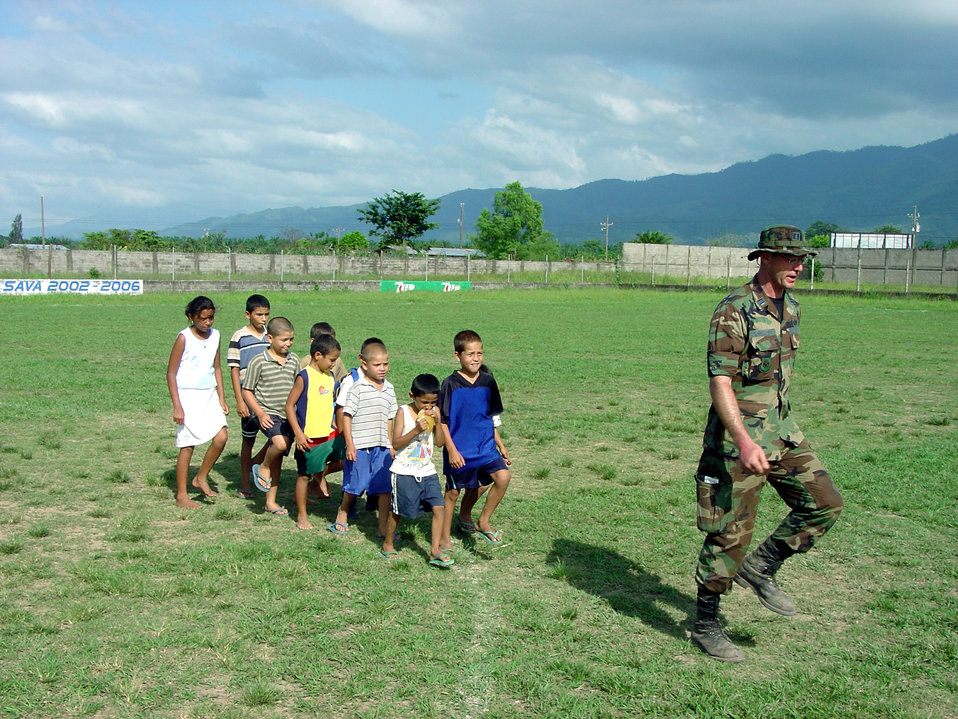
Experience in Honduras

SABA, Honduras -- Capt. Steve Christoff leads a group of Honduran children in a march at a soccer field. Airmen from the 934th Civil Engineer Squadron were here participating in an exercise where they made improvements to the base camp and helped with projects being done in local villages.